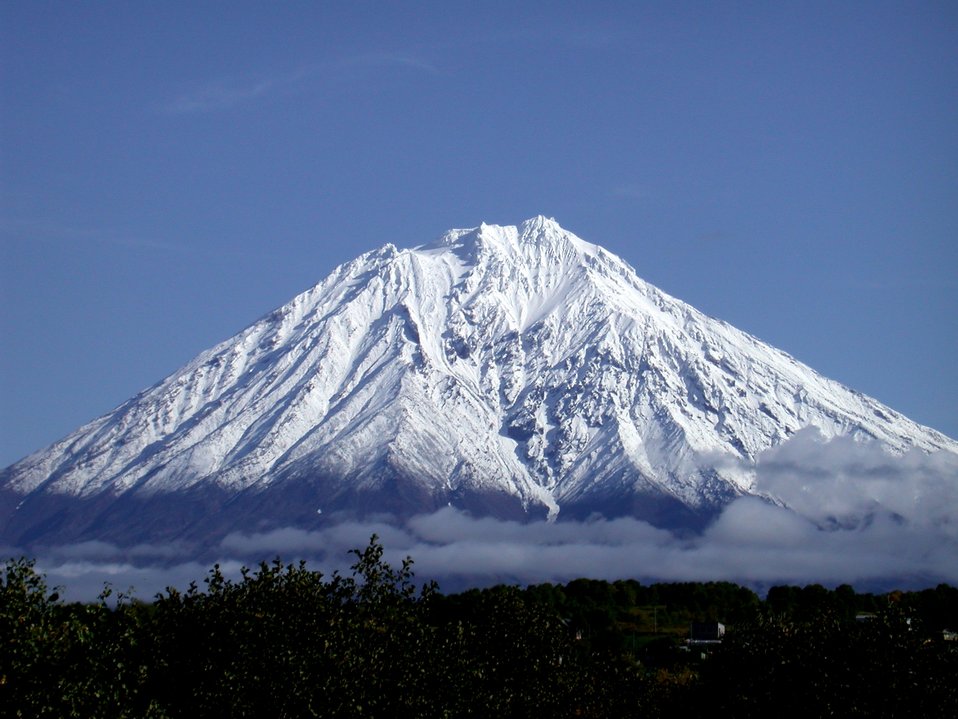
Volcanoes on the Kamchatka Peninsula.